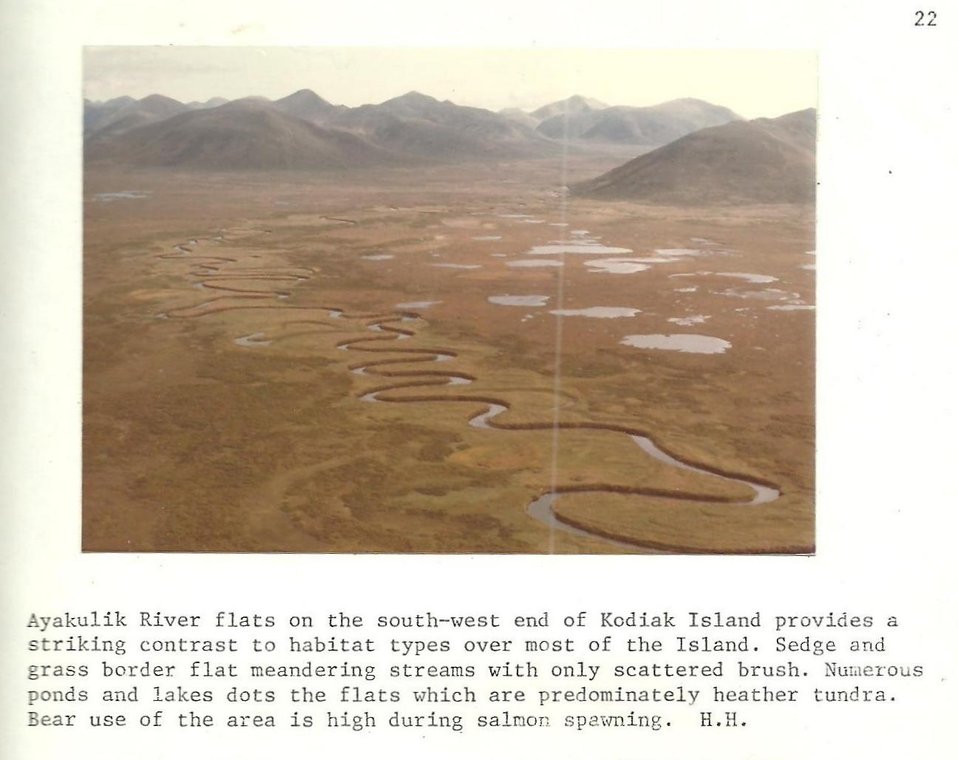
(1979) Ayakulik River

Credit: USFWS

Source and Contact: Kodiak National Wildlife Refuge